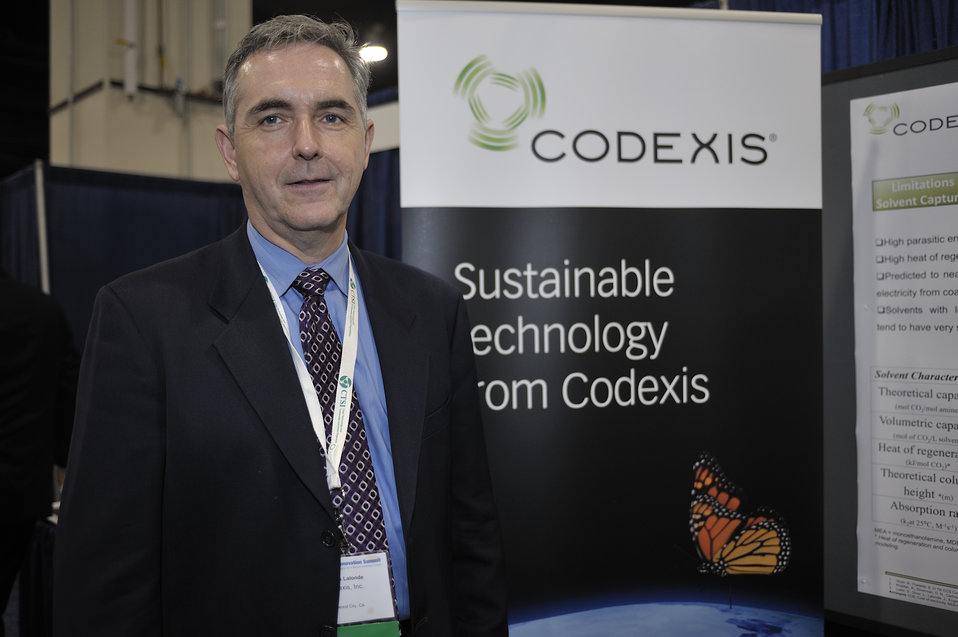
ARPA-E Energy Innovation Summit 2011, 49 of 83

Codexis booth at the Summit's Technology Showcase.